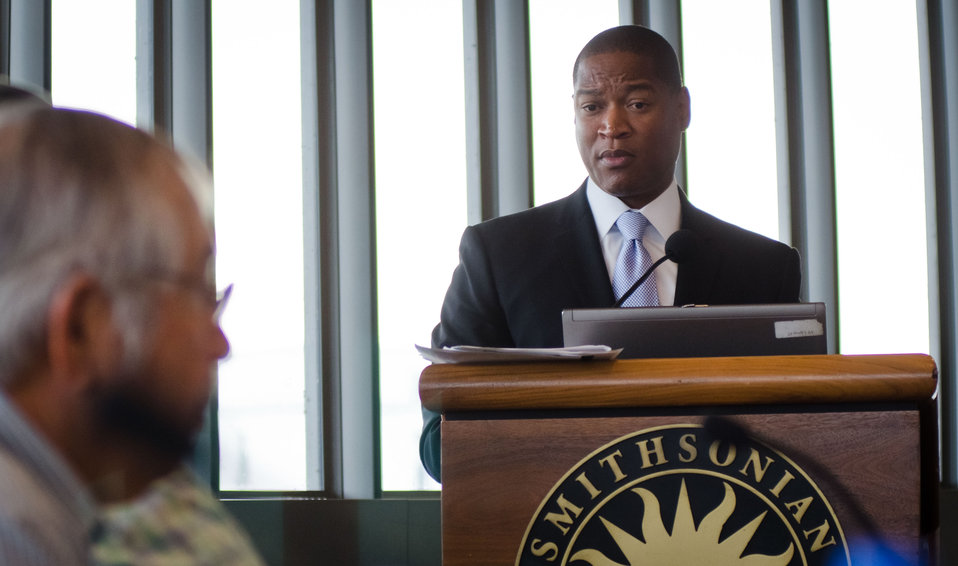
U.S. Department of Agriculture’s (USDA) Foreign Agricultural Service (FAS) Office of Civil Rights Director Daniel Whitley speaks at the first business meeting of USDA’s Council for Native American Farming and Ranching (CNAFR) held at the National Museum of the American Indian in Washington, D.C., on Tuesday, Aug. 14, 2012. CNAFR was created to advise the Secretary on ways to eliminate barriers to participation for Native American Farmers and Ranchers in USDA programs. The Council was established as part of the Keepseagle settlement, and is conducted under the oversight of USDA's Office of Tribal Relations under the Office of the Secretary of Agriculture.